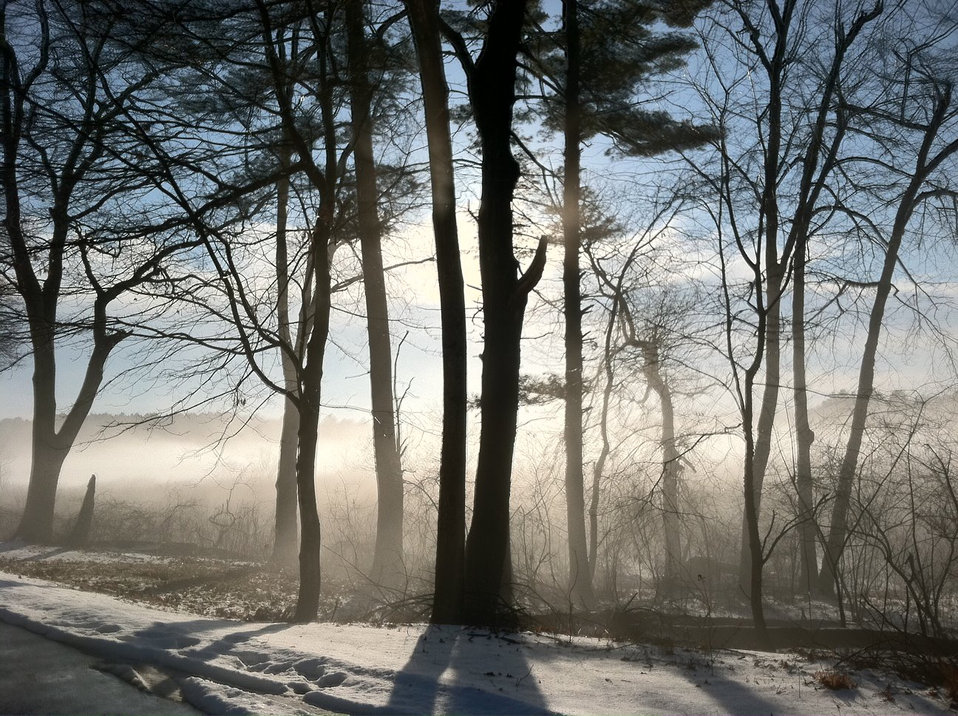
misty morning

This photo captured the peace of a mild winter morning at MA's Great Meadows National Wildlife Refuge. Jan. 26, 2012.